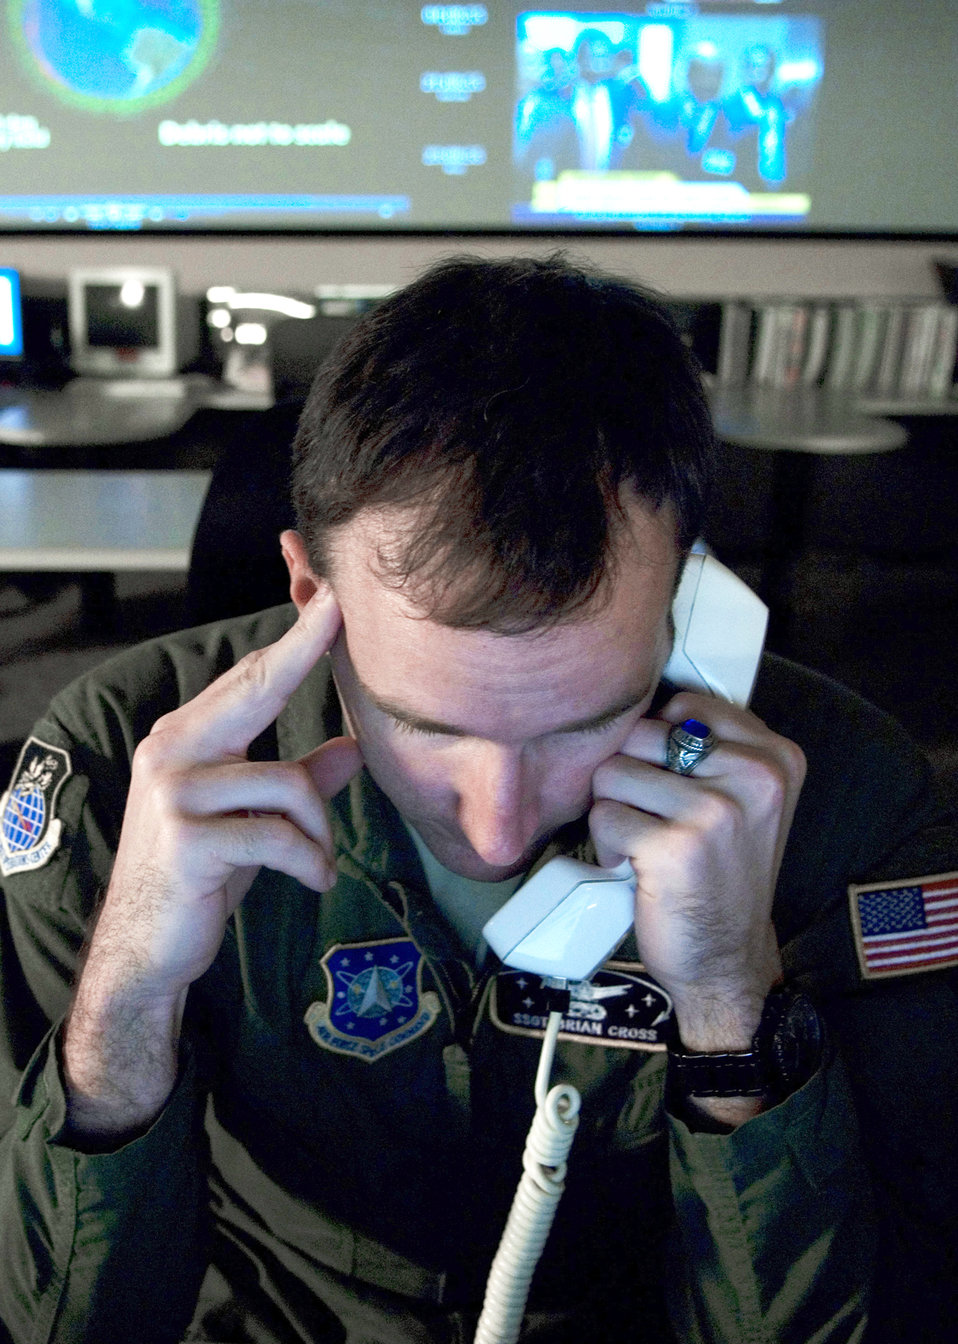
Joint Space Operations Center

Staff Sgt. Brian Cross, a missile warning censor controller at the Joint Space Operations Center at Vandenberg Air Force Base, Calif., receives a phone call with information regarding the Delta II site there. The purpose of the JSpOC is to provide a focal point for the operational employment of worldwide joint space forces, and enable the commander of Joint Functional Component Command Space to integrate space power into global military operations.